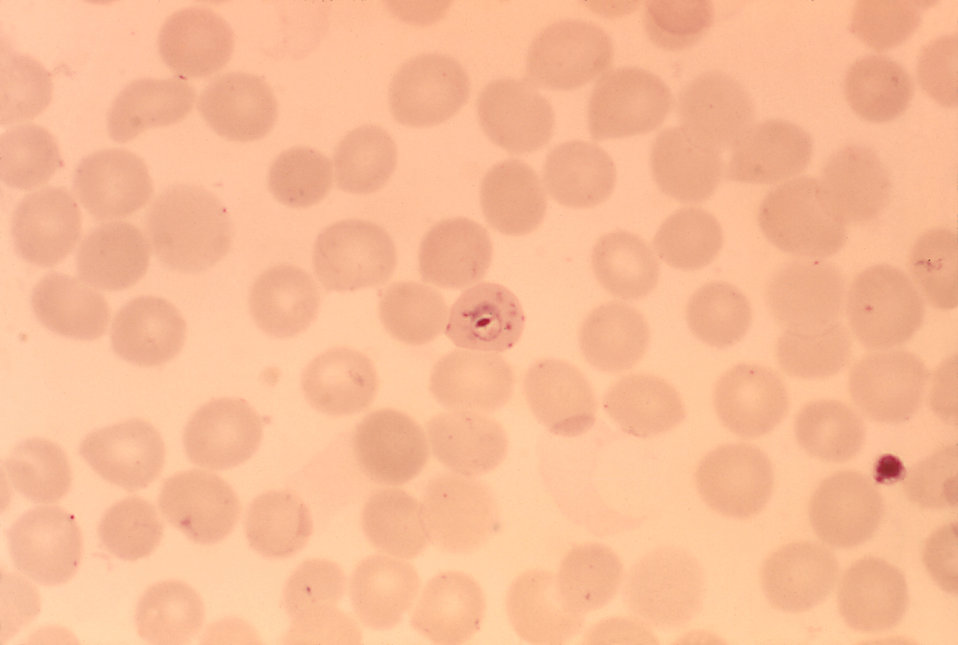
This micrograph depicts a Plasmodium vivax ring within a RBC that also contains Maurer's dots.